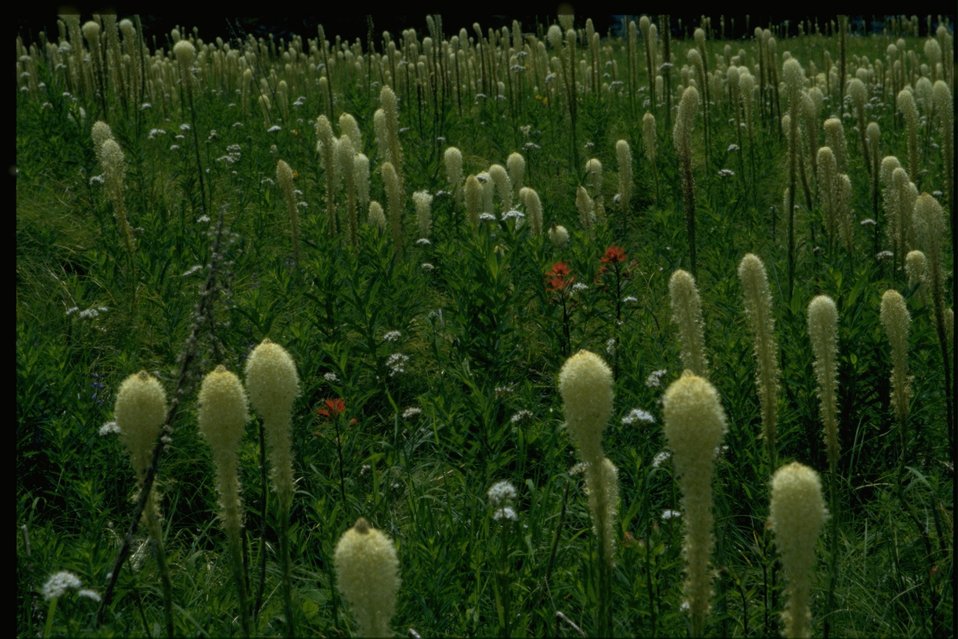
Medium shot, field of Xenophyllum tenax.